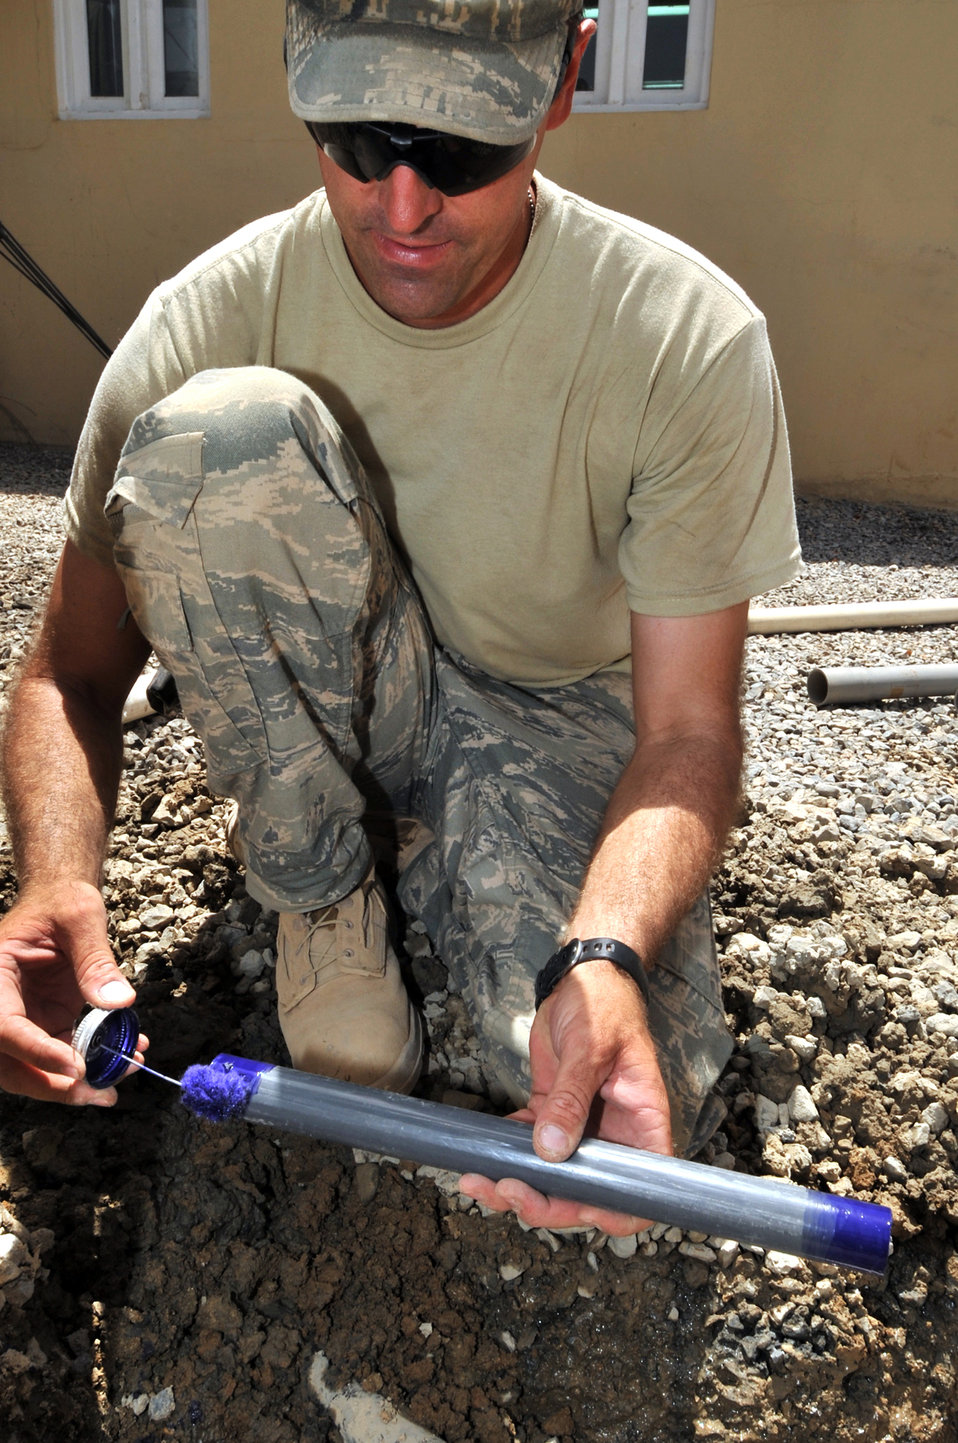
Prime BEEF

Staff Sgt. Travis King applies a primer prior to connecting pipes May 23, 2011, at a combat outpost in Afghanistan. Sergeant King is a utility system craftsman assigned to the 577th Expeditionary Prime Base Engineer Emergency Force Squadron.